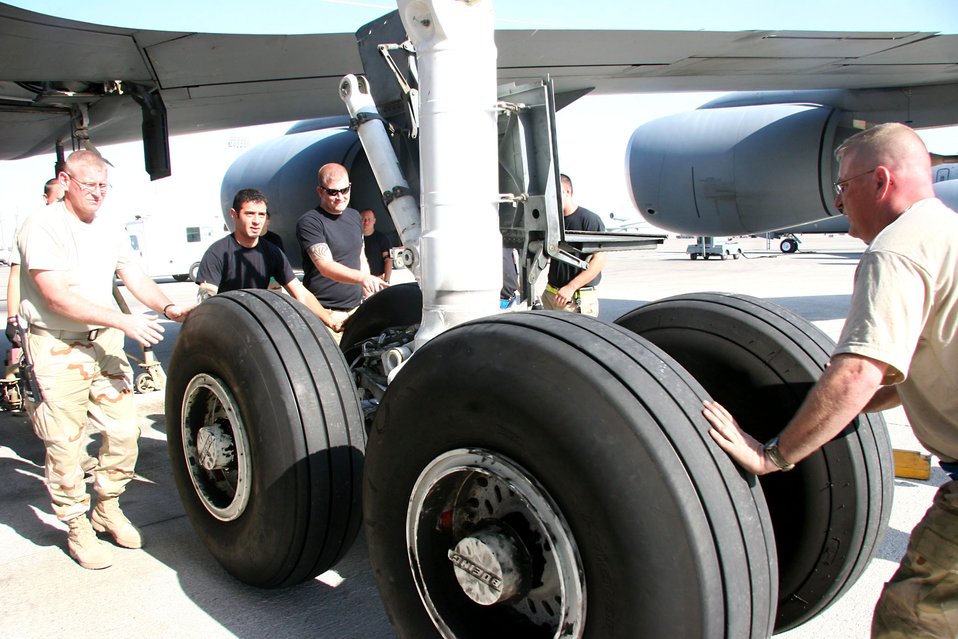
KC-135 strut change

KC-135 Stratotanker maintainers move the main landing gear strut carefully to ensure all four wheels travel the same distance so when the strut is pushed back into place it will line up exactly Dec. 21. If this process is not done carefully it is difficult to re-secure the gear to the aircraft. The Airmen are assigned to the 380th Expeditionary Aircraft Maintenance Squadron and deployed from the 22nd Aircraft Maintenance Squadron at McConnell Air Force Base, Kansas.